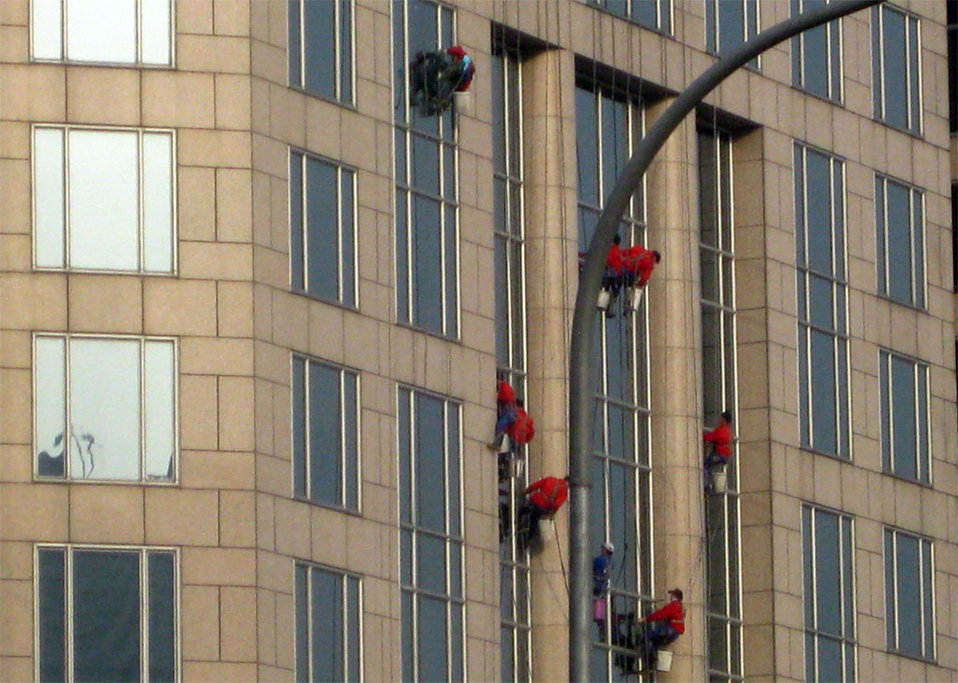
Beijing Window Washers

Behind the Scenes: Window washers along the route to the Diaoyutai State Guesthouse in Beijing, China February 20, 2009.